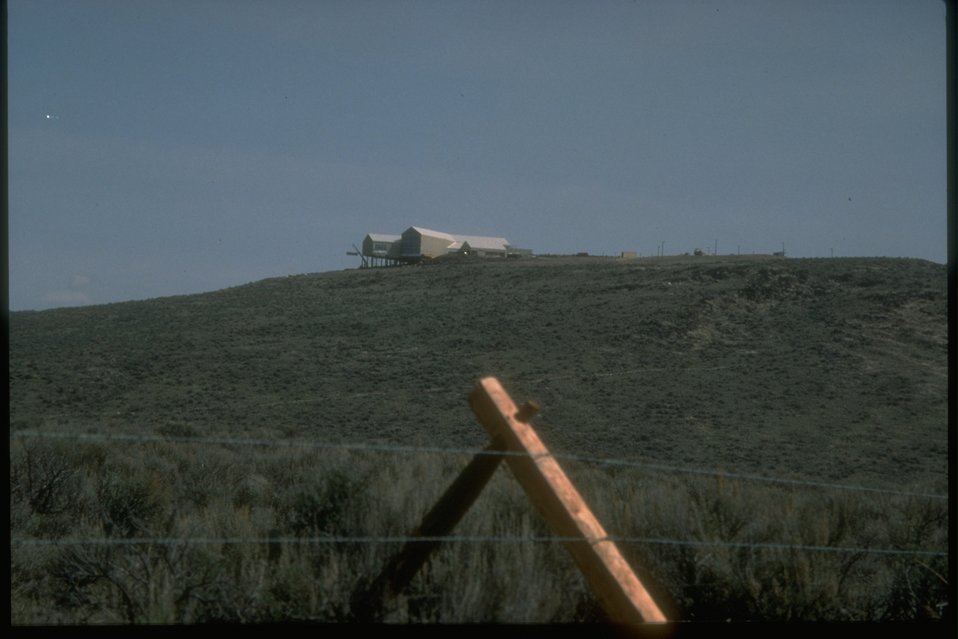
A distant view of the NHOTIC under construction outside of Baker, OR.